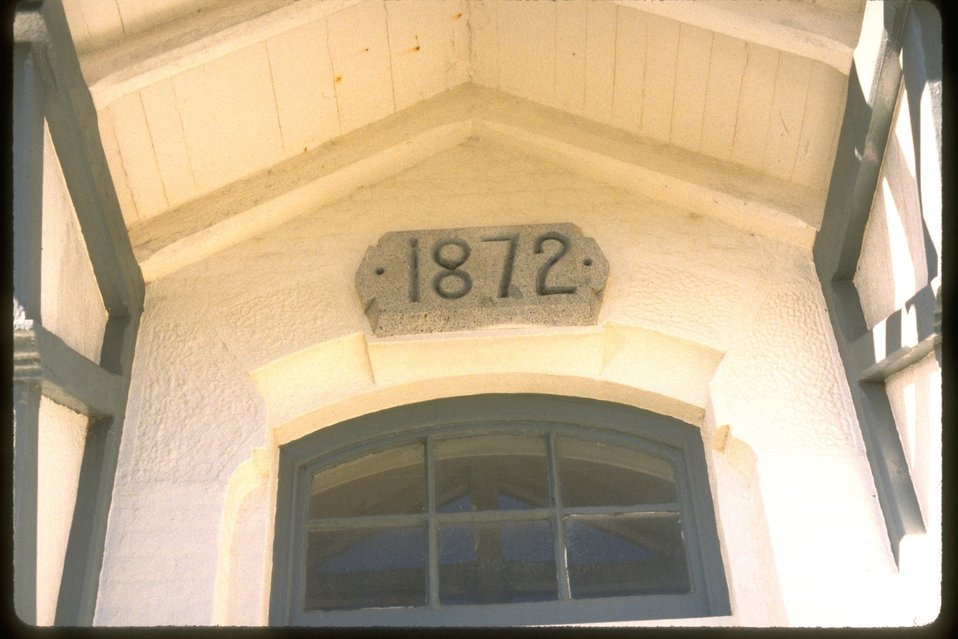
Date panel of Yaquina Head lighthouse.